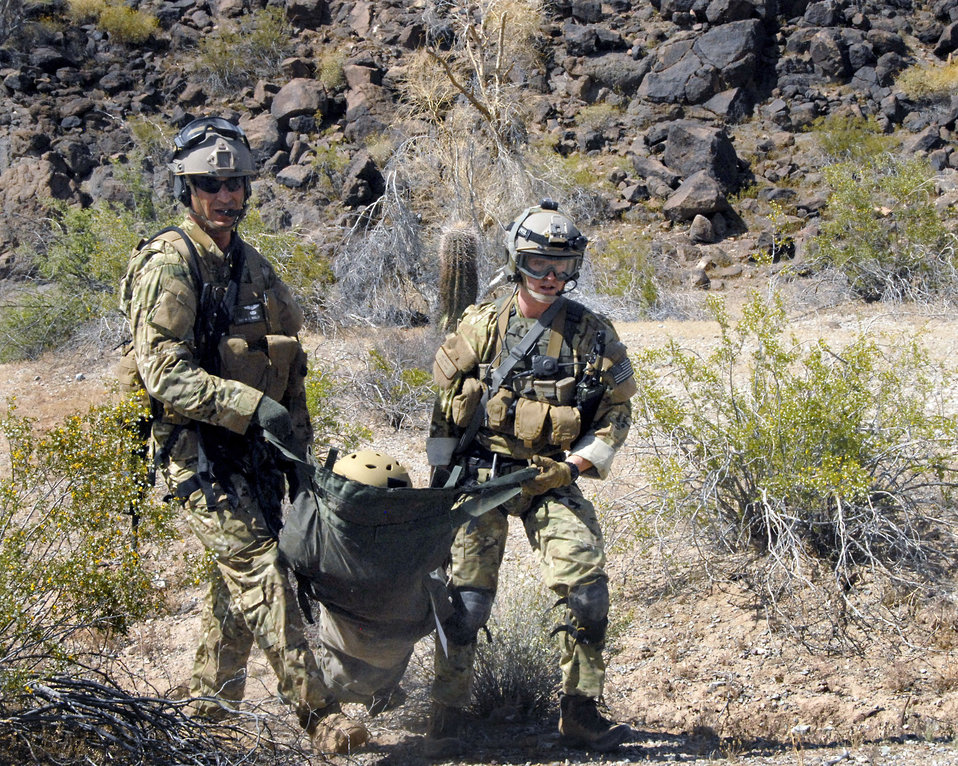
Airmen train for combat search, rescue missions

Pararescuemen participating in an Exercise Angel Thunder 2010 combat search and rescue mission carry a volunteer survivor to the HH-60G Pave Hawk rescue helicopter at the Barry M. Goldwater range April 18, 2010, in the Sonoran Desert in Ariz.